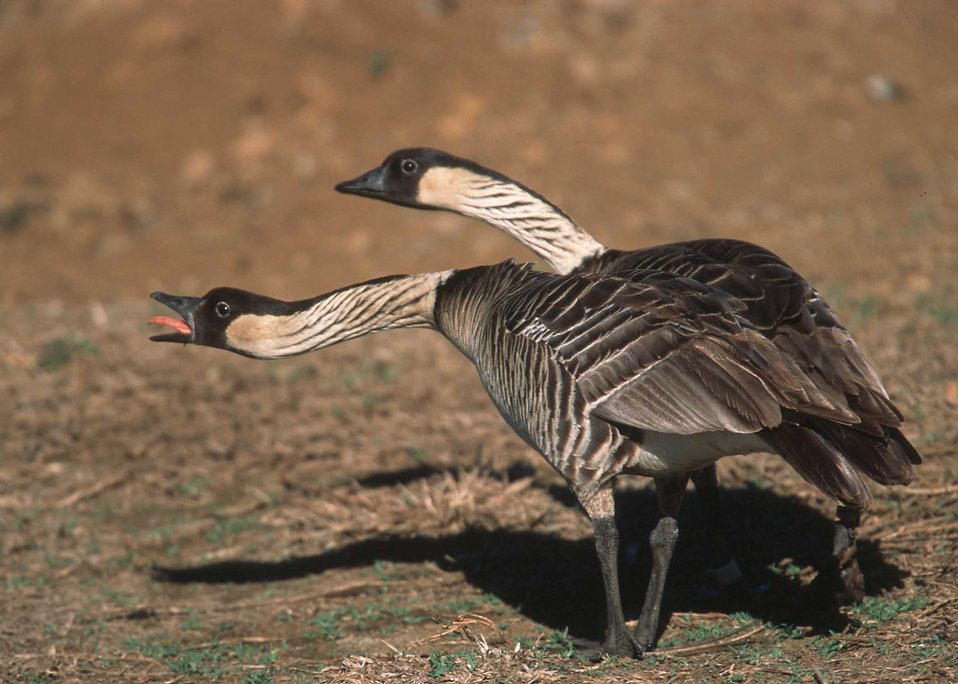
Nene goose in Hawaii.